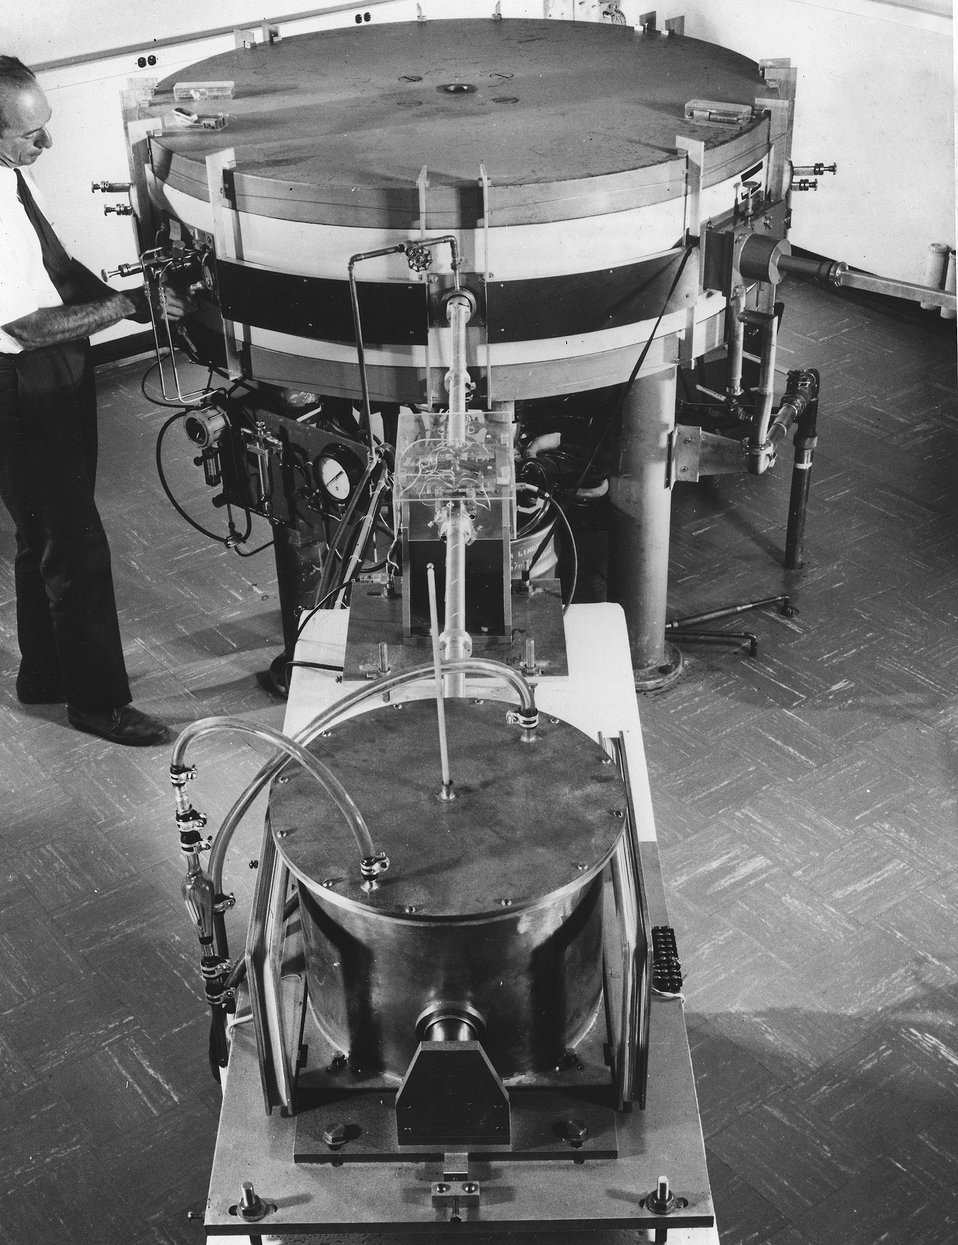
The beta-ray spectrometer shown in this photograph is used for measuring accurately intensities and energies of the mono-energetic groups of electrons emitted by many radioactive nuclei. c. 1967